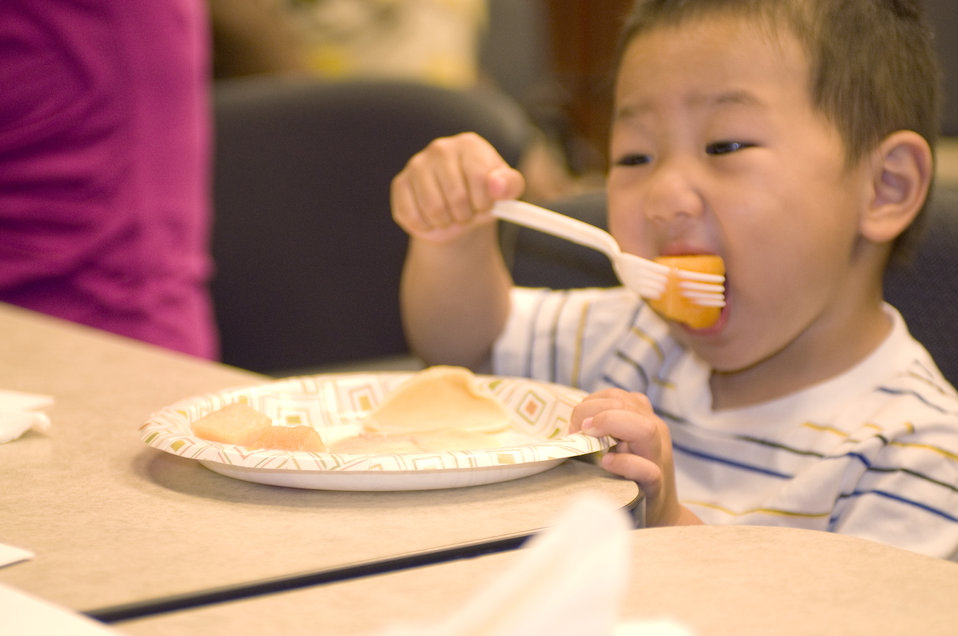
The very young boy depicted here, was holding a plastic fork in his right hand, with which he'd speared a piece of cantaloupe, which he'd been served in a daycare setting, along with a number of other fruits upon a paper plate during the class's meal time. At this particular moment, he was taking a bite out of his fruity snack.